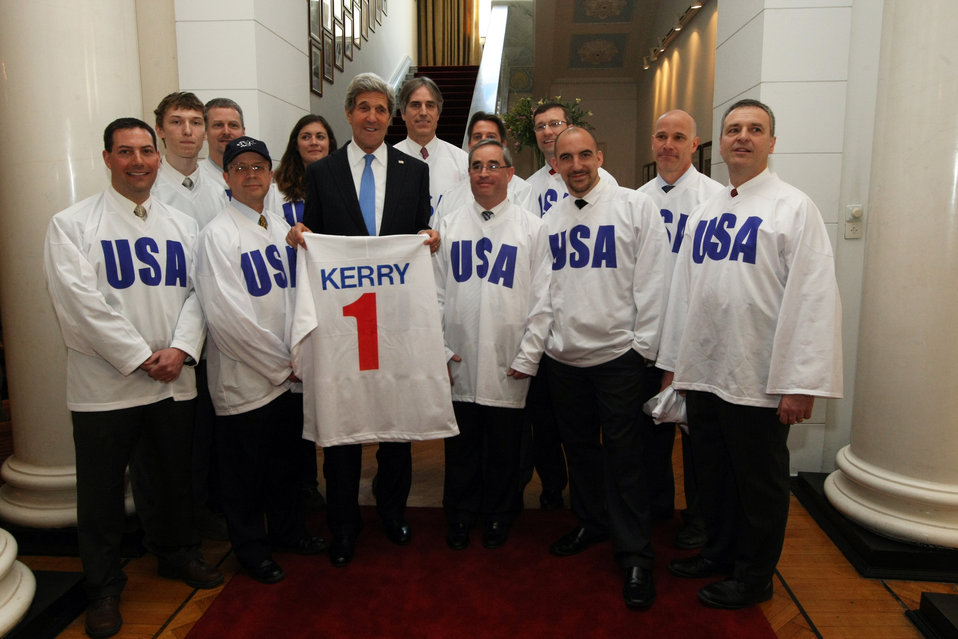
Secretary Kerry With Embassy Moscow's Hockey Team

U.S. Secretary of State John Kerry proudly shows off his new hockey jersey, given to him by Embassy Moscow's pickup hockey team at the U.S. ambassador's residence, the Spaso House, in Moscow, Russia, on May 8, 2013.